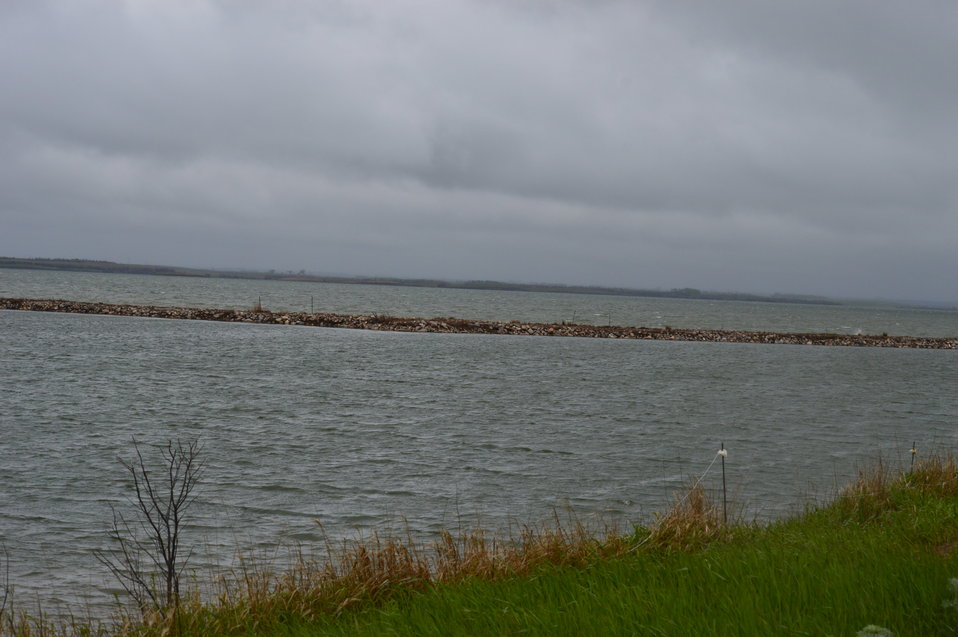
Audubon Lake

Scenery and wildlife and Audubon National Wildlife Refuge in North Dakota.